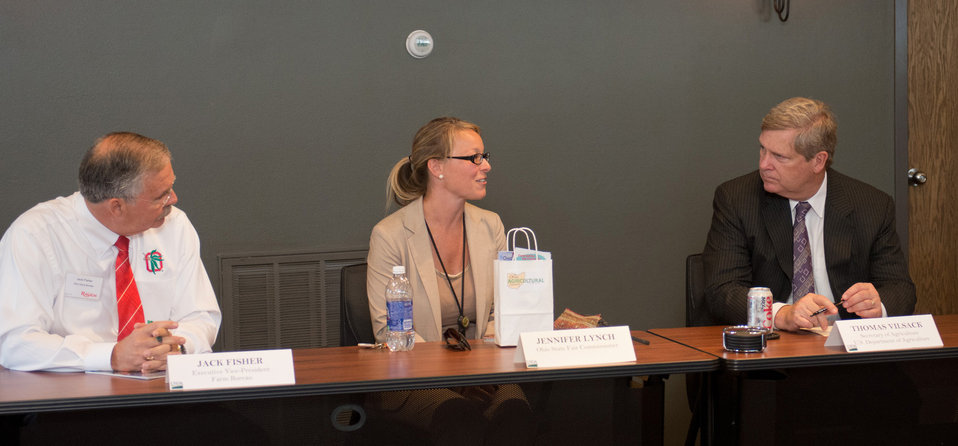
(L to R) Executive Vice-President of the Ohio Farm Bureau Jack Fisher, Ohio State Fair Commissioner Jennifer Lynch, and Agriculture Secretary Tom Vilsack sit at a round table discussion about Ohio Agriculture and the drought conditions in Columbus, OH on Friday, August 3, 2012.